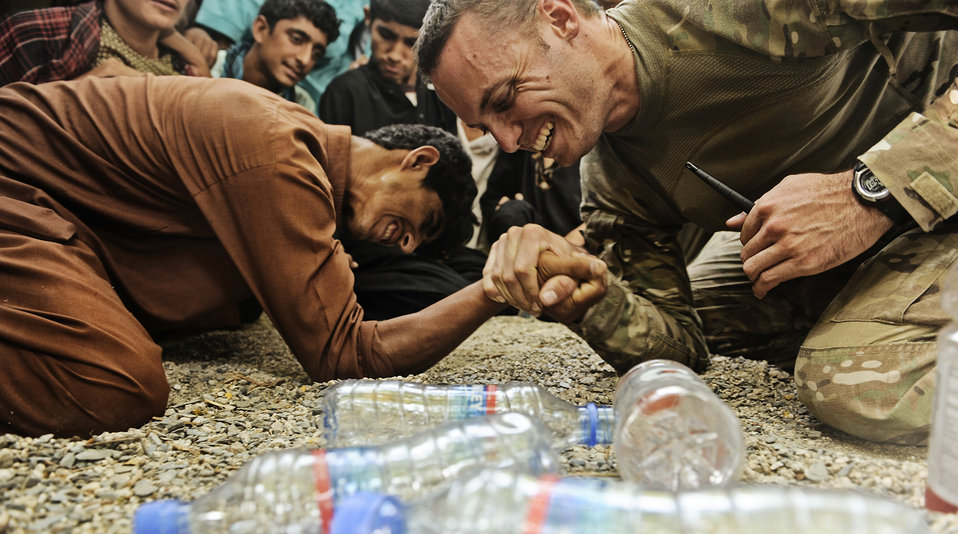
Friendly Competition

Senior Airman John Fitzgerald arm wrestles an Afghan child Aug. 21, 2011, in the Alingar District, Afghanistan, after completing the first phase of a multi-day operation. The operation called for a cordon and search in a village where insurgents were believed to reside. Fitzgerald is a medic assigned to the Laghman Provincial Reconstruction Team.